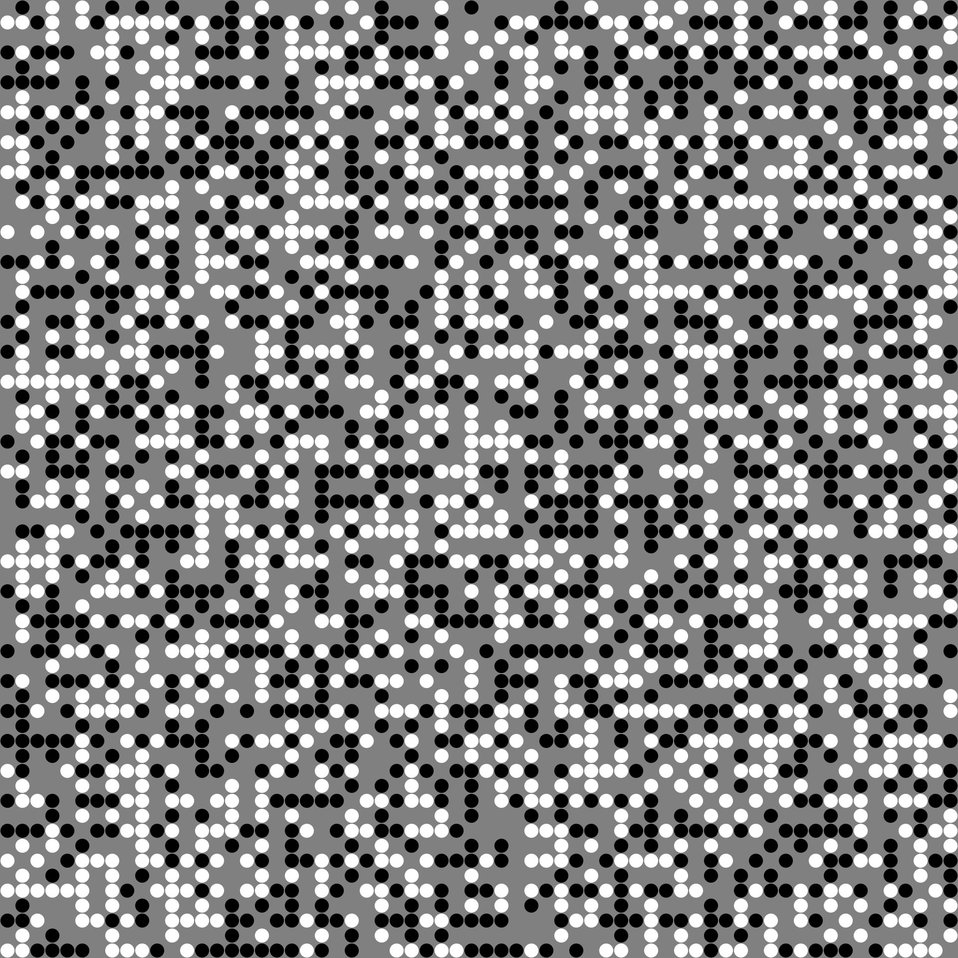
Moebius

Graphical representation of the moebius function.